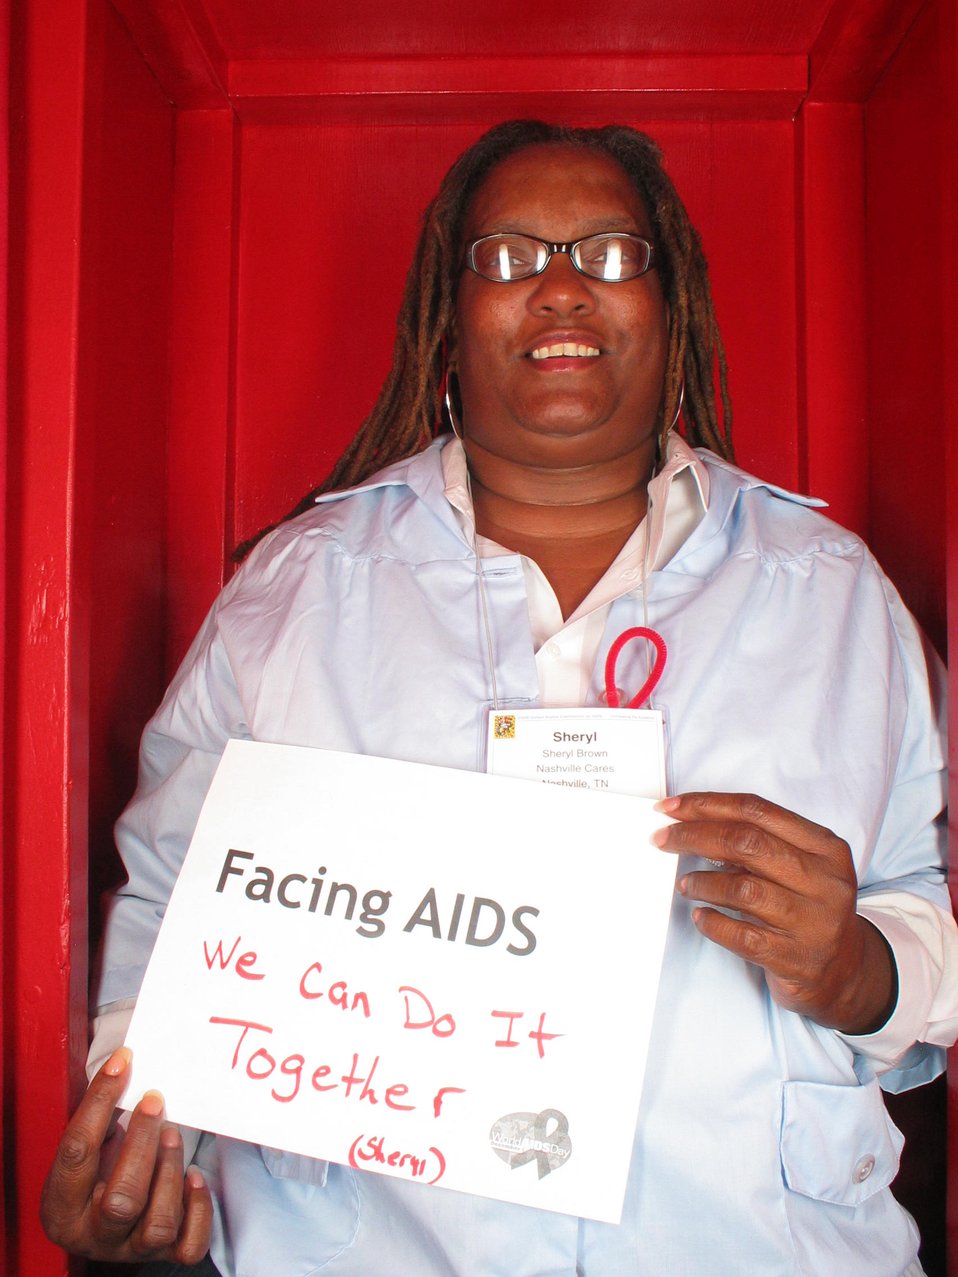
Facing AIDS we can do it together.